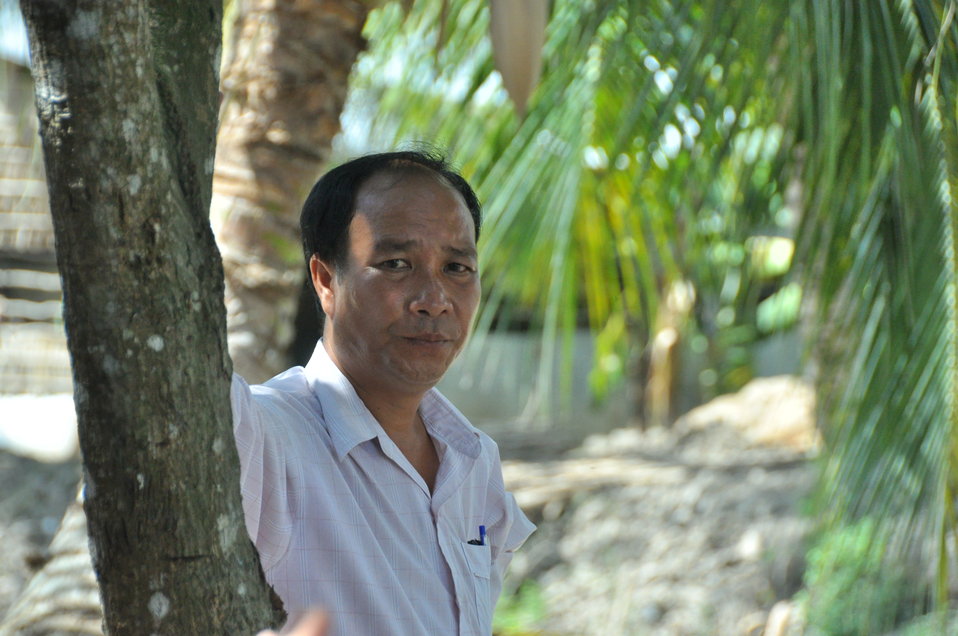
Local duck farmers discuss implementation of biosecurity standards in Can Tho

USAID Vietnam